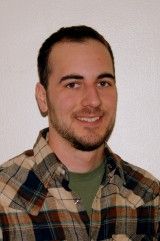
Matthew Strausser

FWS Wilderness Fellow Matthew Strausser